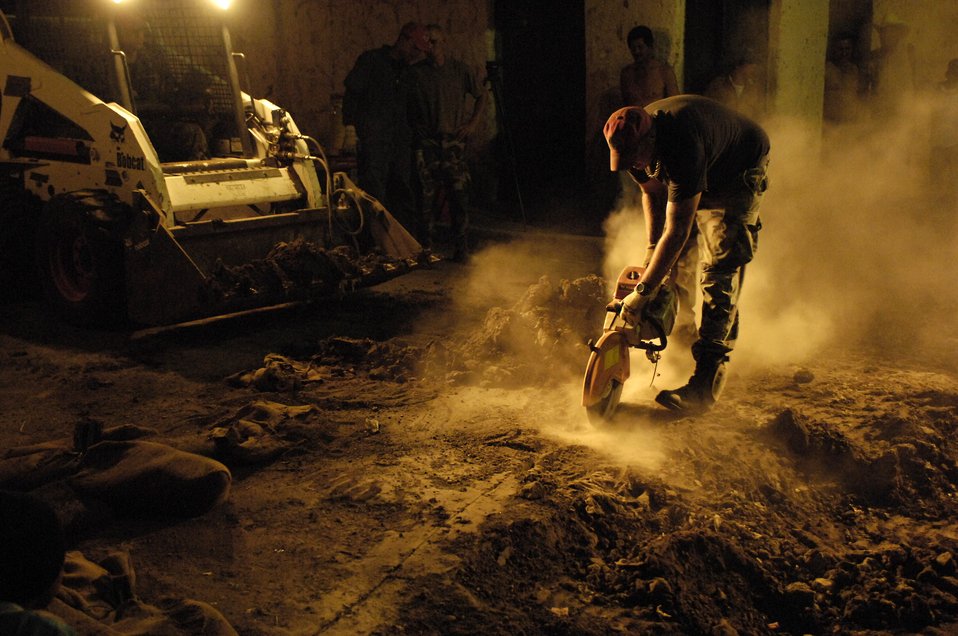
Red Horse Airmen pave the way in Nicaragua

Staff Sgt. Brian Vaden cuts through the surface of an old road March 2 in Santa Teresa, Nicaragua, in preparation to replace the roadway. The effort was part of New Horizons-Nicaragua 2007, a joint U.S.-Nicaraguan military humanitarian and training exercise.